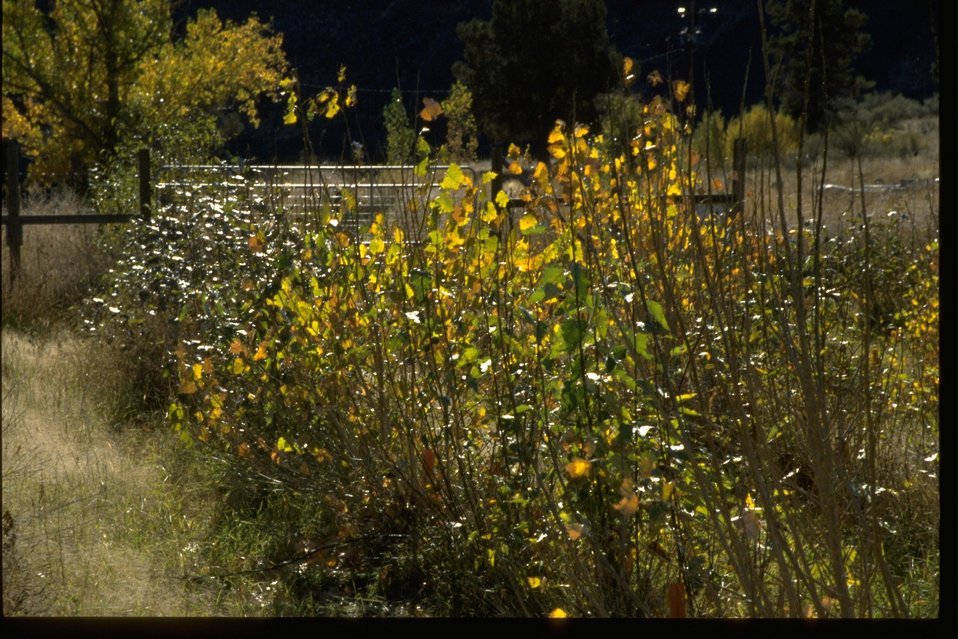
Bridge Creek Cottonwood orchard.